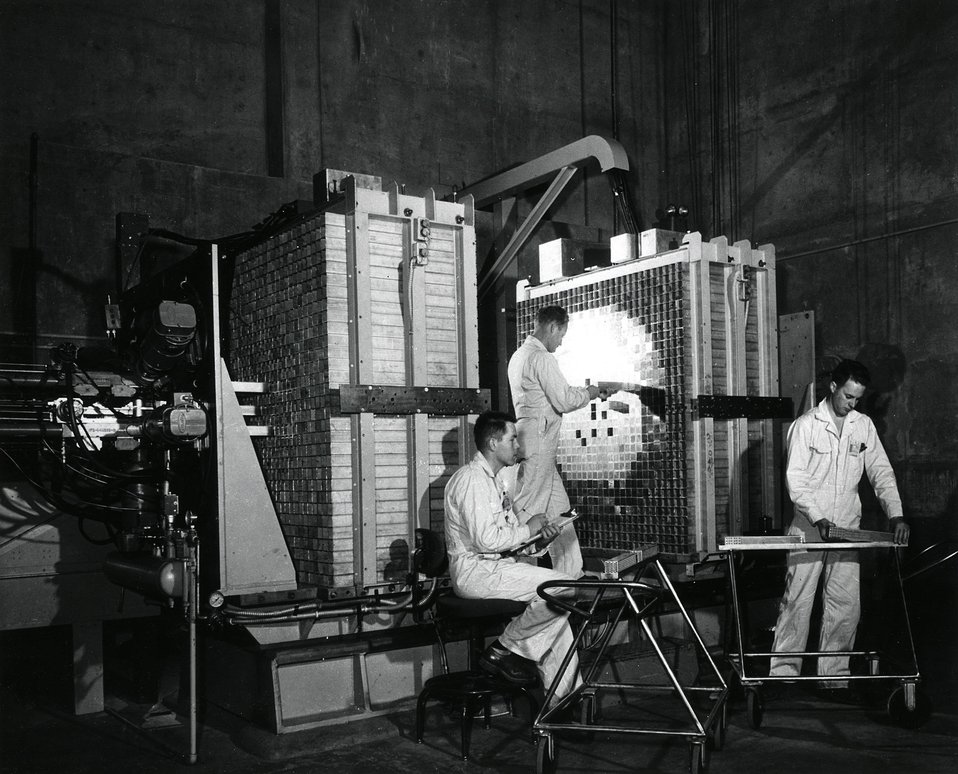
Employees of the Argonne National Laboratory load trays into halves of Zero Power Reactor III at the U.S. Atomic Energy Commission's National Reactor Testing Station. C.1956